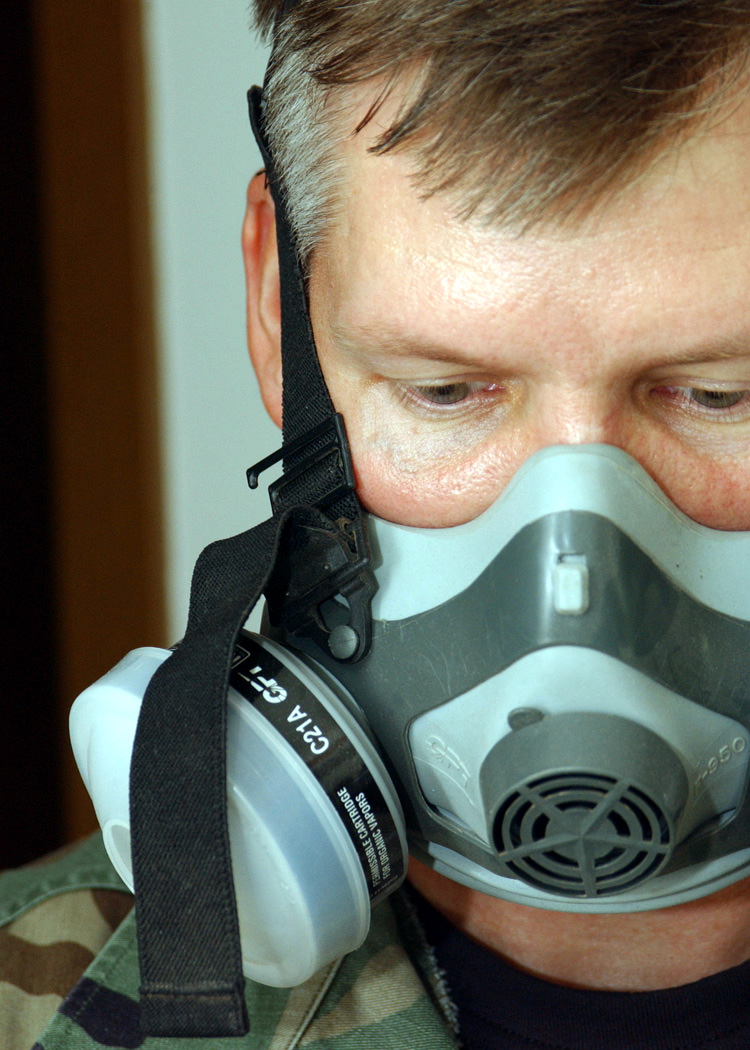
Bugging out

EIELSON AIR FORCE BASE, Alaska -- Tech. Sgt. Richard Hartke uses a respirator while applying pesticide in base housing here June 28. The 354th Civil Engineer Squadron's pest management section Airmen use biological, mechanical and cultural methods to deter and catch pests around base.